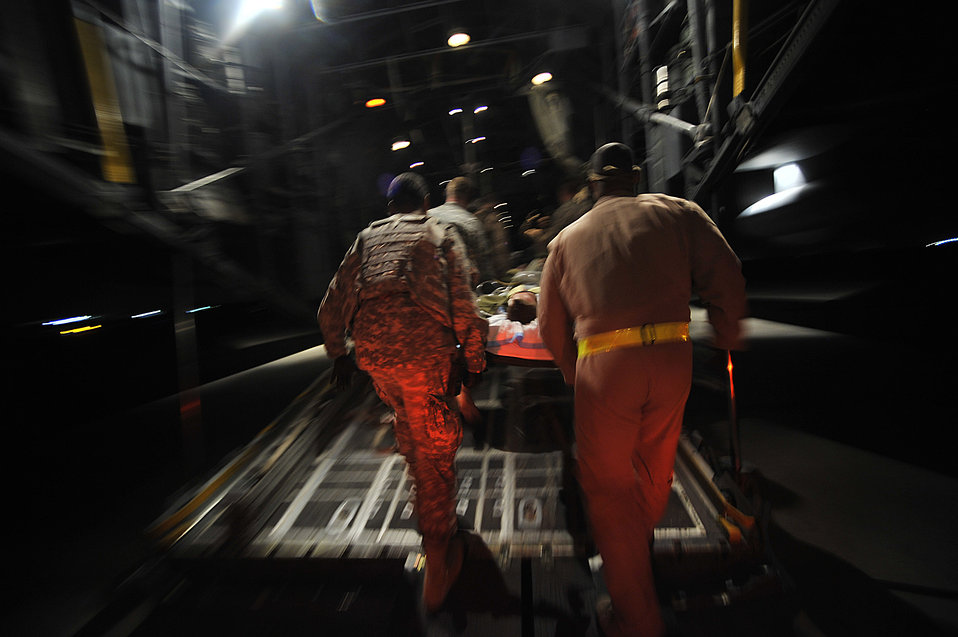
Handle with care

Patients from a forward operating base in Southwest Asia board a C-130 Hercules Sept. 23 during a bandage mission. These missions travel to different forward operating bases throughout Iraq and pick up patients and transport them to the Air Force Theater Hospital at Joint Base Balad.